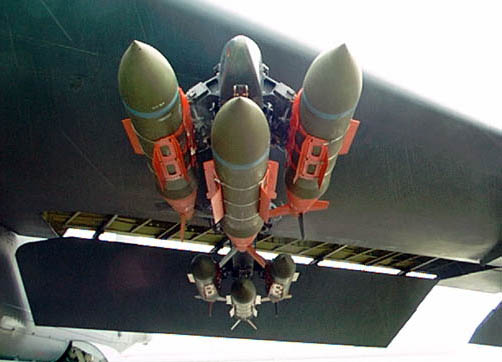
JOINT DIRECT ATTACK MUNITIONS GBU 31/32/38